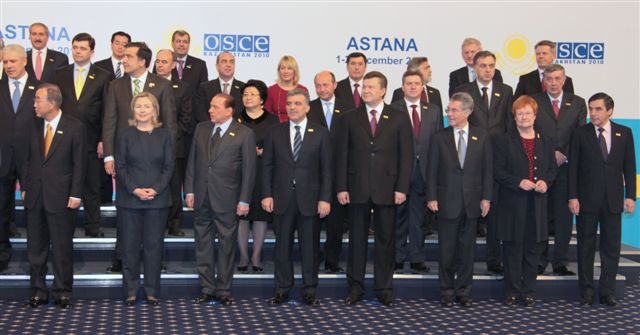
Secretary Clinton Poses for a Photo With OSCE Leaders

U.S. Secretary of State Hillary Rodham Clinton poses for a photo with leaders at the OSCE Summit Plenary Session in Astana, Kazakhstan, on December 1, 2010.